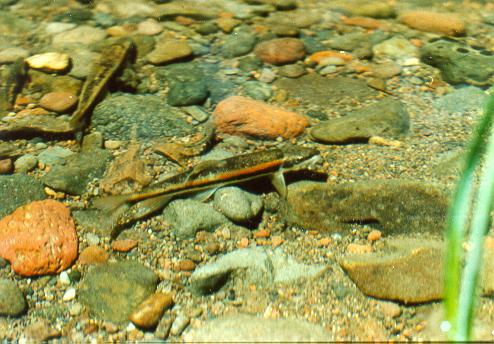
Spawning Modoc Sucker

Modoc sucker spawning in a stream in northern California.